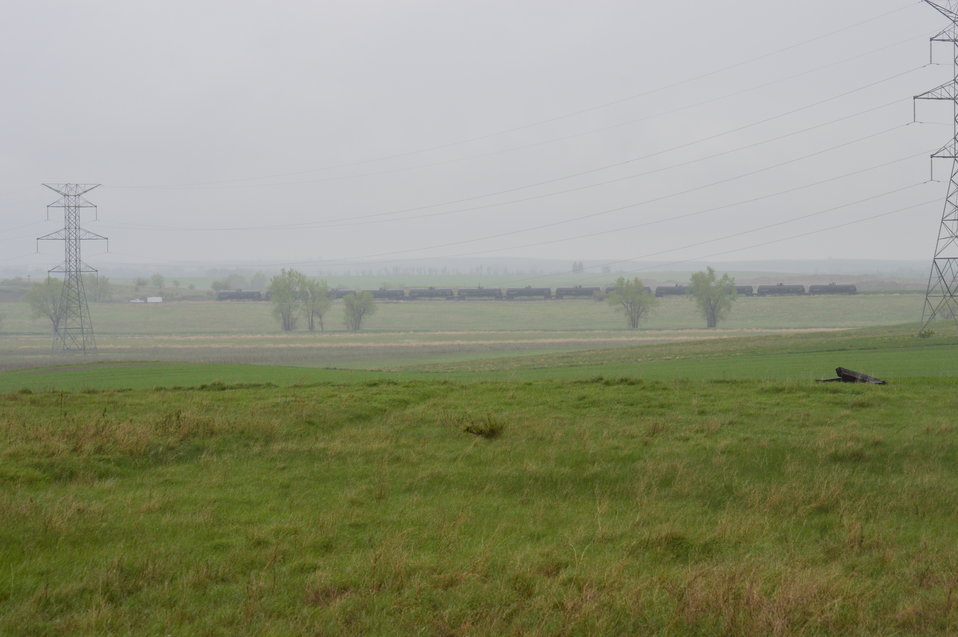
Train through Lost Lake NWR

Scenery and wildlife at Lost Lake National Wildlife Refuge in North Dakota.